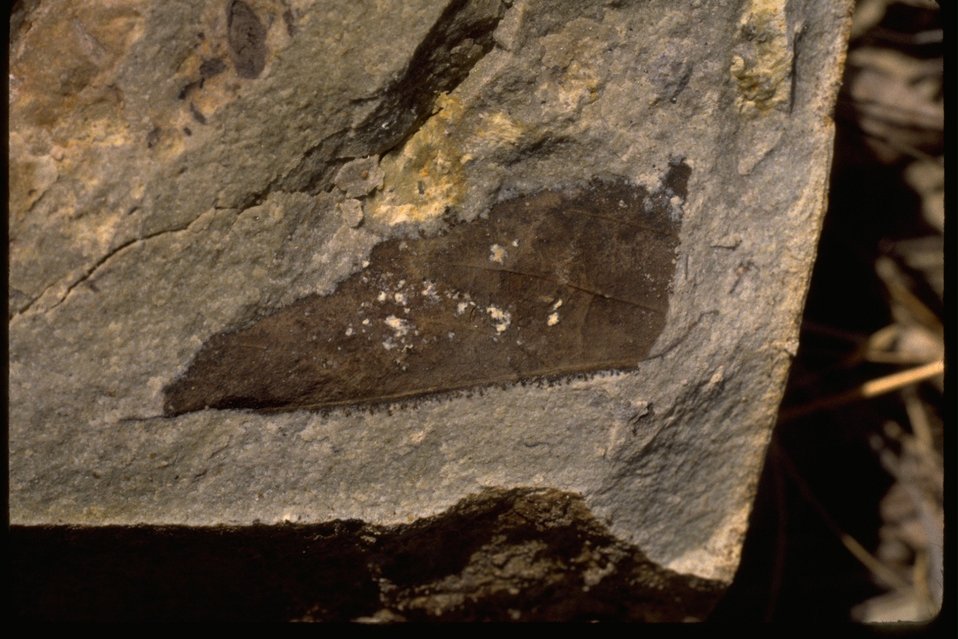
A fossil location at Hutton Creek out next to Hutton Creek.